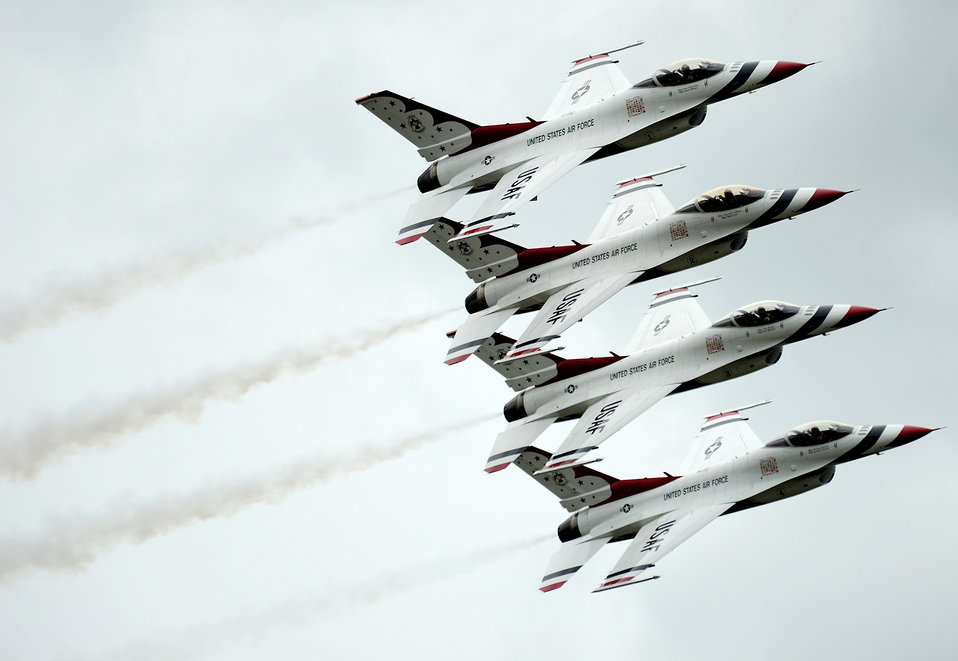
Thunderbirds in Finland

The Thunderbirds perform June 17, 2011, above Turku Airport, Finland.